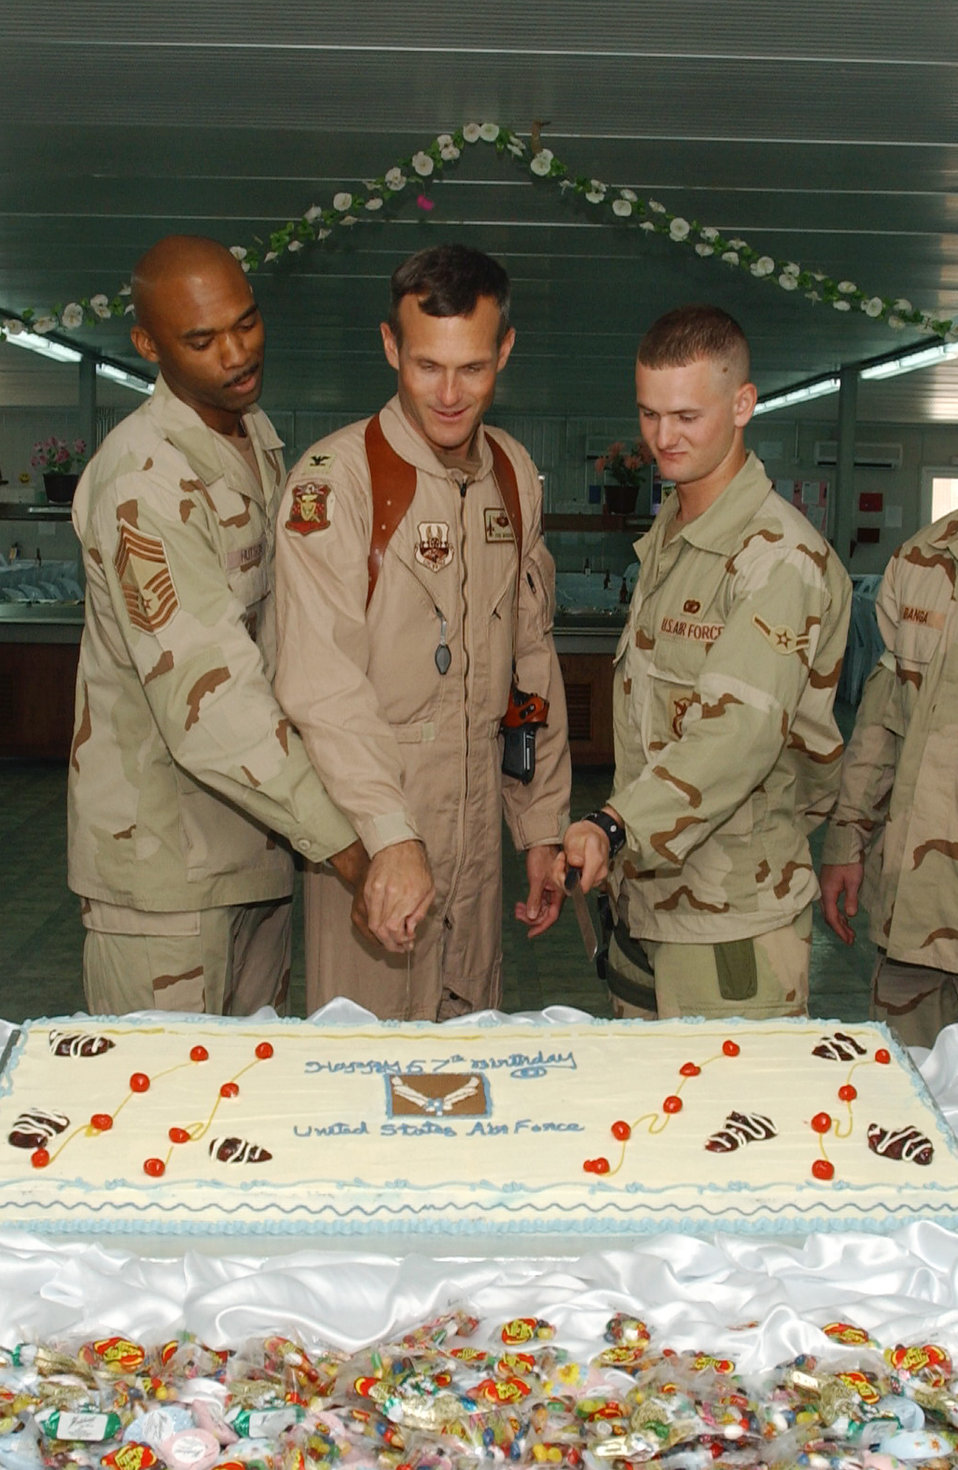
Happy birthday

KIRKUK AIR BASE, Iraq -- Chief Master Sgt. Clarence Hutson, 506th Group Chief Enlisted Manager (left), Col. Phillip Murdock, 506th Group Commander and Airman Gregory Decker from the 506th Expeditionary Security Forces Squadron cut an Air Force birthday cake at the dining facility in honor of the Air Force's 57th birthday here Sept. 18.